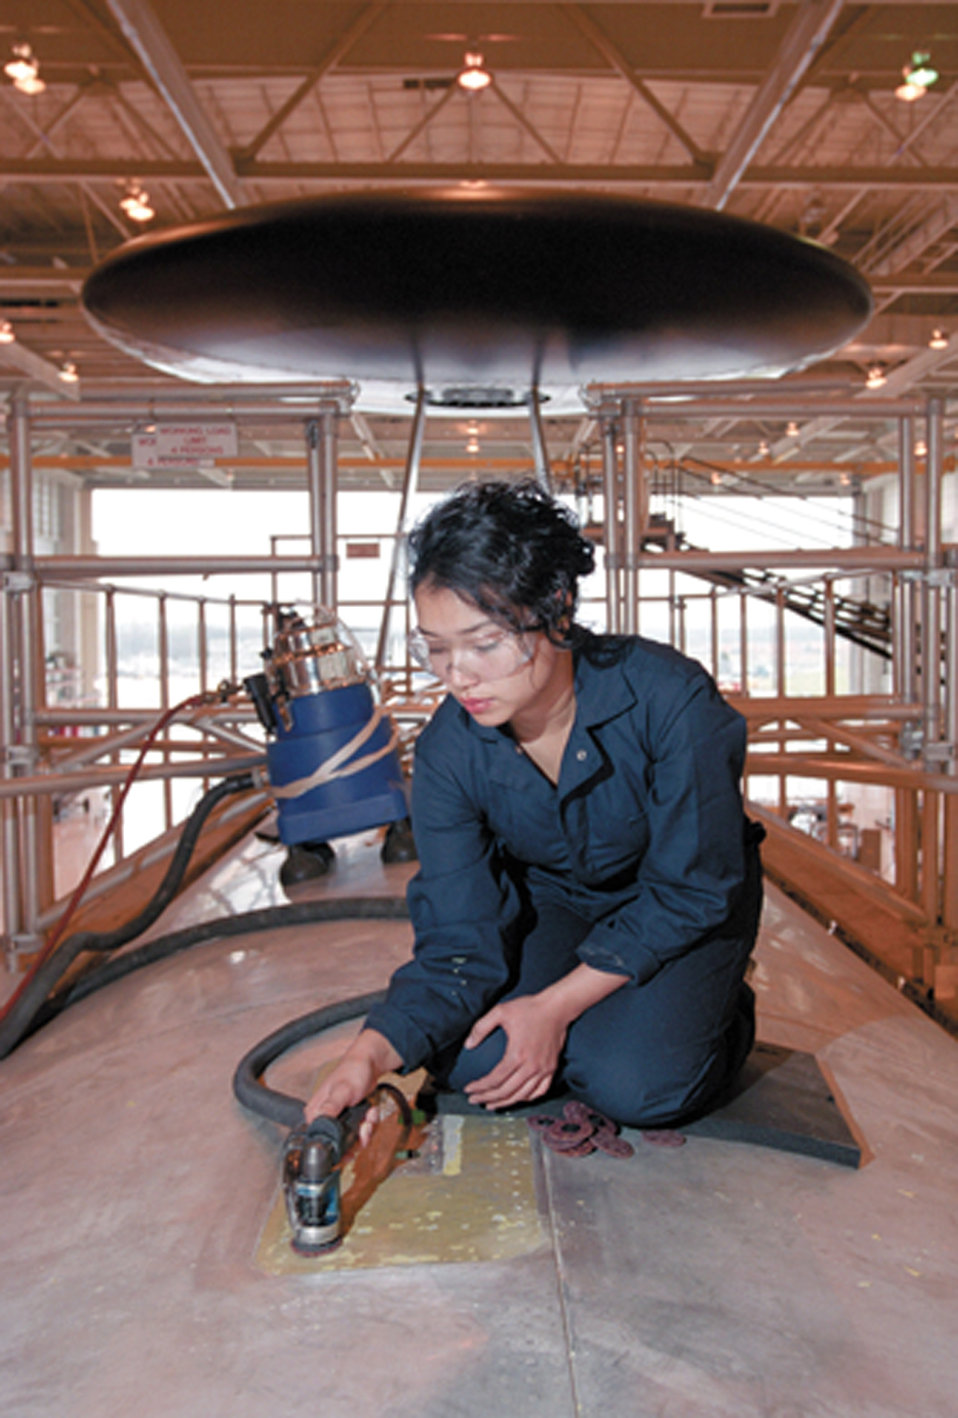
Corrosion control

TINKER AIR FORCE BASE, Okla. -- Edith Clemons, a sheet-metal mechanic, attacks corrosion on an E-3 Sentry undergoing depot maintenance. The areas where three satellite-communications antennas attach to the aircraft are always inspected for corrosion.